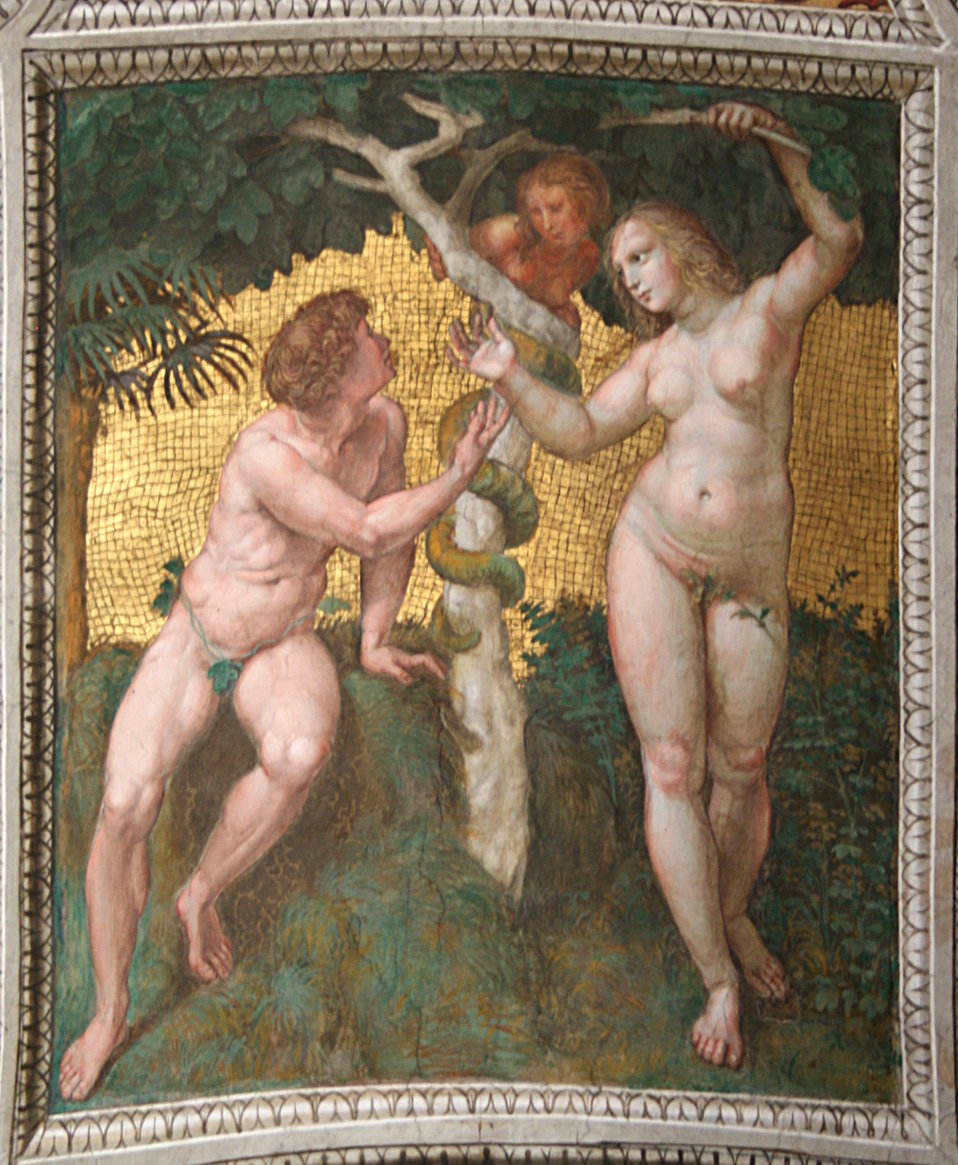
0 Adam et Eve - Fresque de Raphaël - Stanza della Signatura (2)